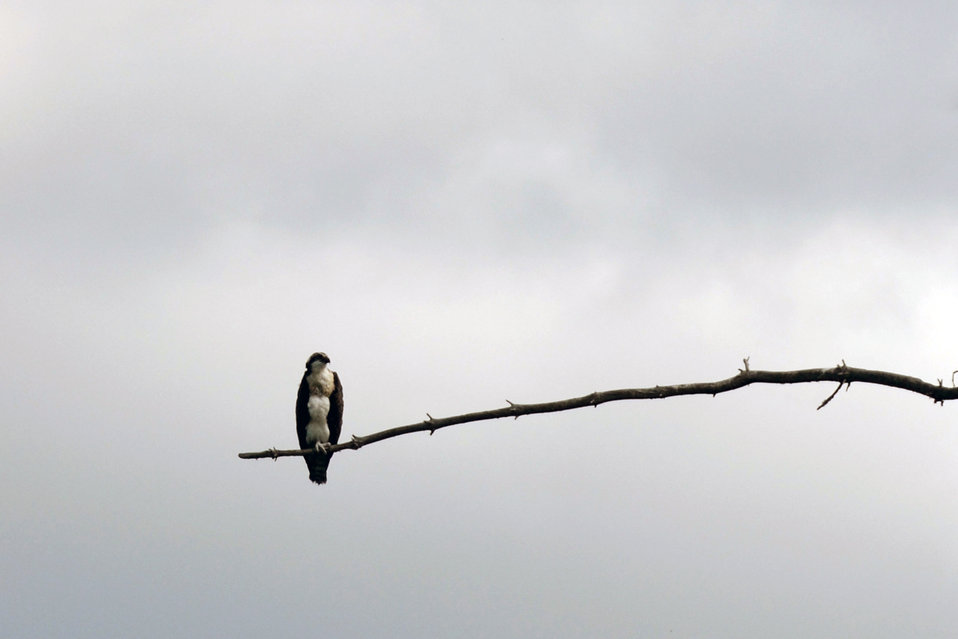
Osprey at Tamarac National Wildlife Refuge.